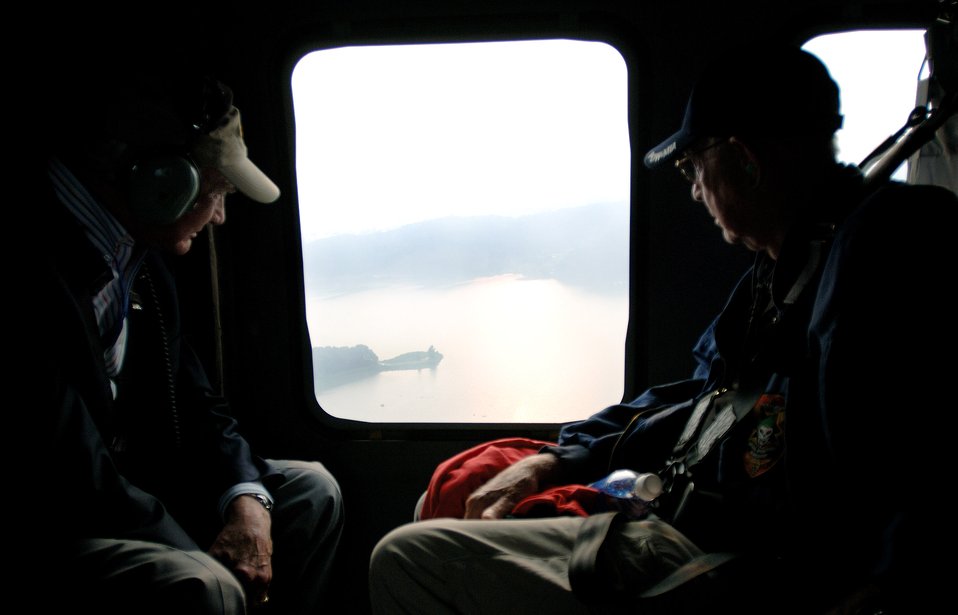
Pilots of yesteryear interact with Airmen of today

Korean War veterans Col. Buzz Aldrin (left) and Lt. Col. Harold Fischer take an aerial look over South Korea while flying in a helicopter during a Sept. 11 tour of Osan Air Base, South Korea. Colonel Aldrine served as lunar module pilot for Apollo 11 July 16 through 24, 1969, the first manned lunar landing mission. Colonel Fischer is a Korean War double ace. The Korean War veterans are visiting South Korea during a week-long tour in observance of the Air Force's 60th Anniversary.